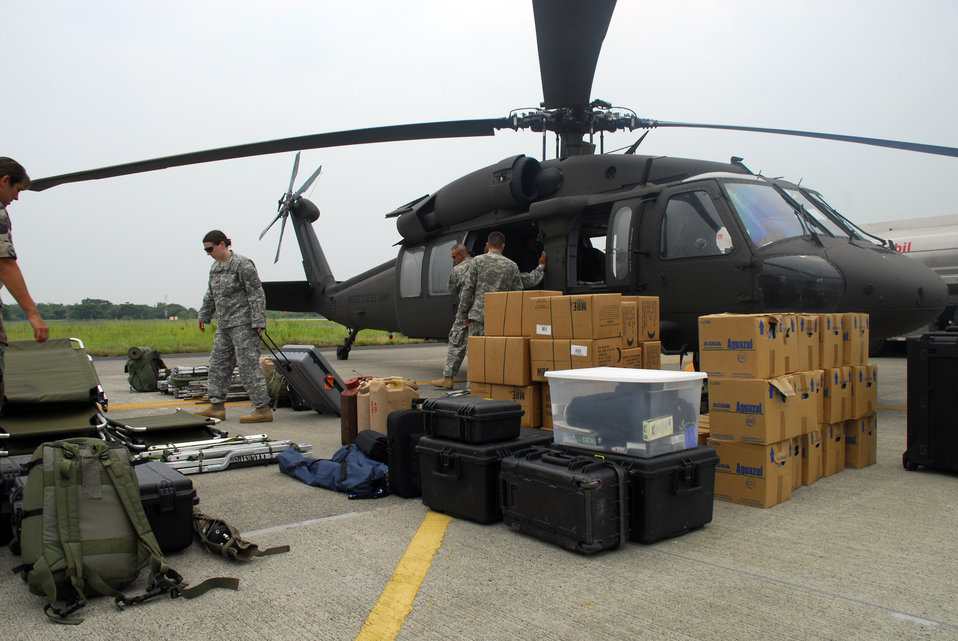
Servicemembers support El Salvador disaster relief exercise

Members of Joint Task Force-Bravo unload a UH-60 Blackhawk in preparation for Fuerzas Aliadas Humanitarias 2008 May 4 at Comalapa Air Base, El Salvador. The American servicemembers are involved in the U.S. Southern Command and Salvadoran Ministry of Defense-sponsored disaster relief exercise.